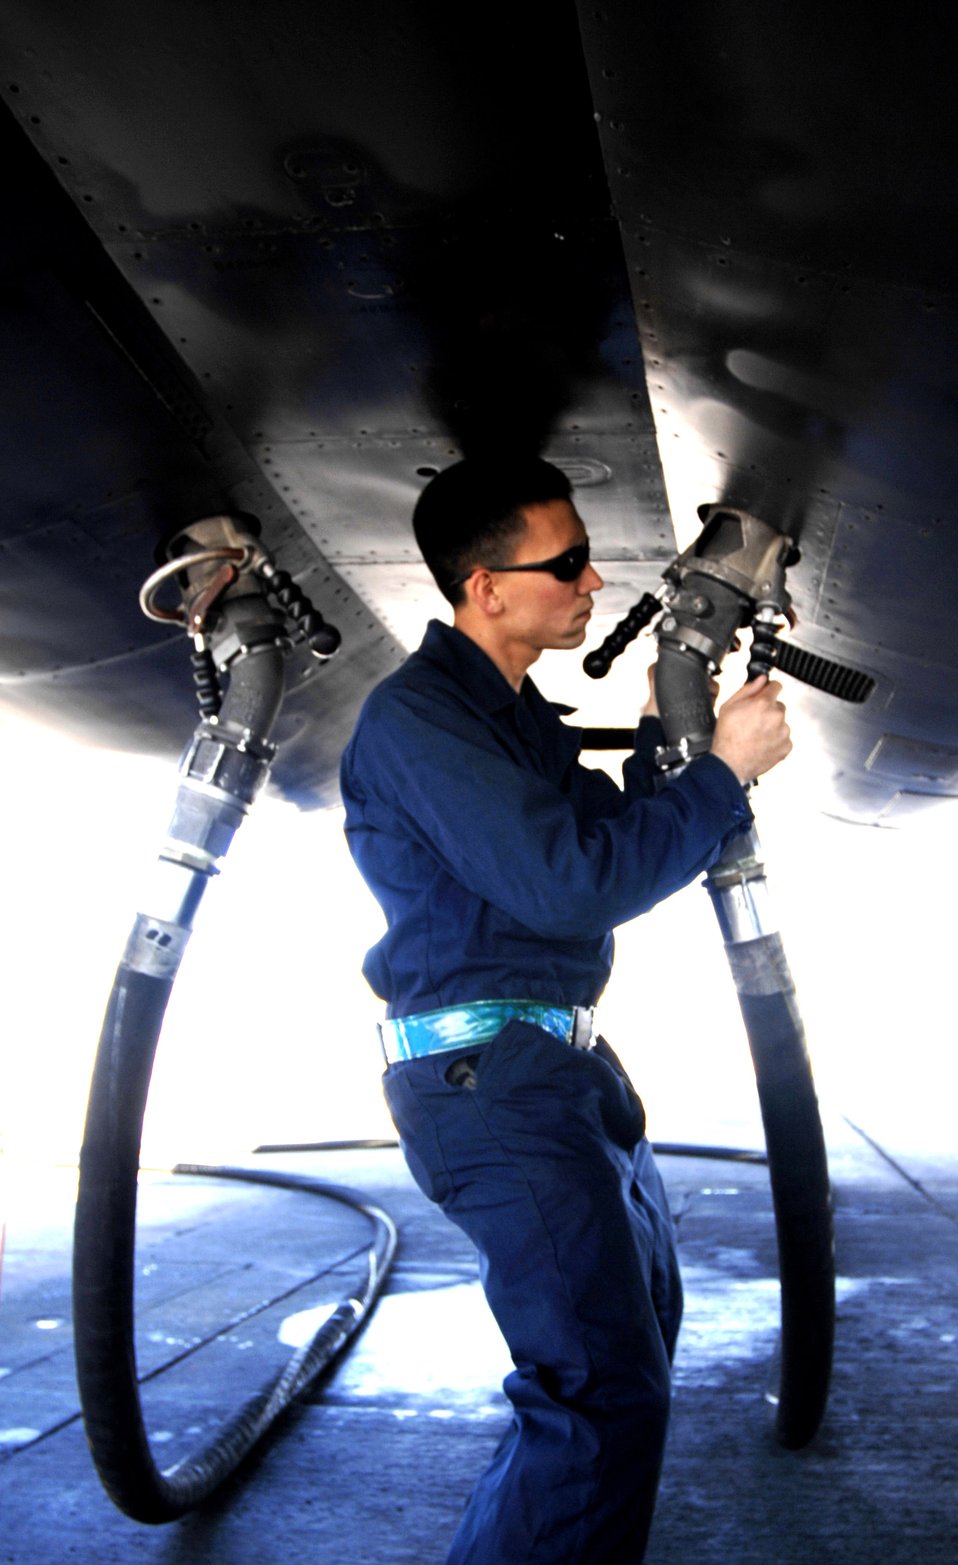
B-1B achieves first supersonic flight using synthetic fuel

Airman James Lau locks in a fuel hose onto a B-1B Lancer March 19 at Dyess Air Force Base, Texas. The bomber was the Air Force's first aircraft to fly at the supersonic speeds using a 50/50 blend of synthetic and petroleum fuel. The supersonic flight occured over the White Sands Missile Range airspace in south-central New Mexico, but took off from Dyess AFB. Airman Lau is assigned to Dyess AFB.